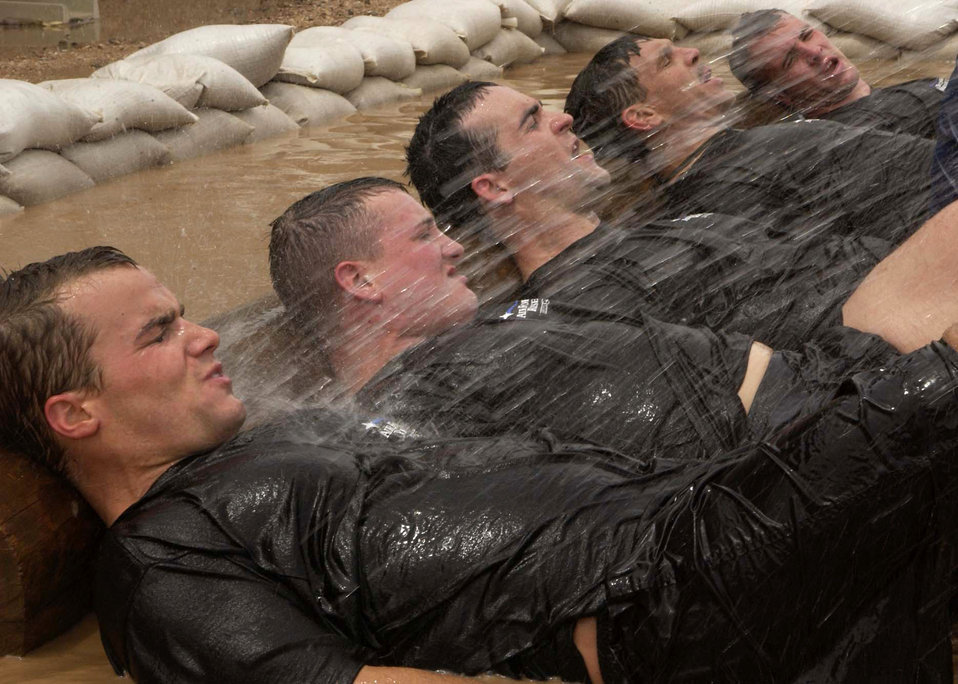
PJ selection process

Military and civilian applicants taking part in the 306th Rescue Squadron pararescue screening perform flutter kicks in a mud pit at Davis-Monthan Air Force Base, Ariz., on Friday, April 21, 2006. Applicants must pass a timed 3-mile run, 1,500-meter swim, calisthenics and other tasks before proceeding to the 10-week indoctrination course at Lackland AFB, Texas.